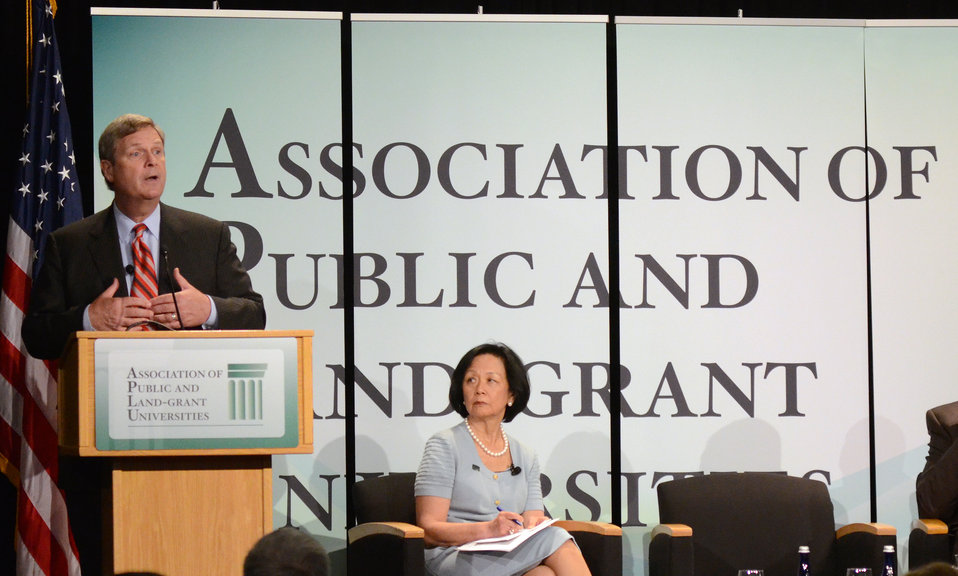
University of Illinois Chancellor Phyllis Wise listens to Agriculture Secretary Tom Vilsack speak at the Association of Land-Grant Universities (APLU) 150th Year Anniversary of the Morrill Act: Advancing the Legacy at the Ronald Reagan Building and International Trade Center in Washington D.C. on Tuesday, June 26, 2012.